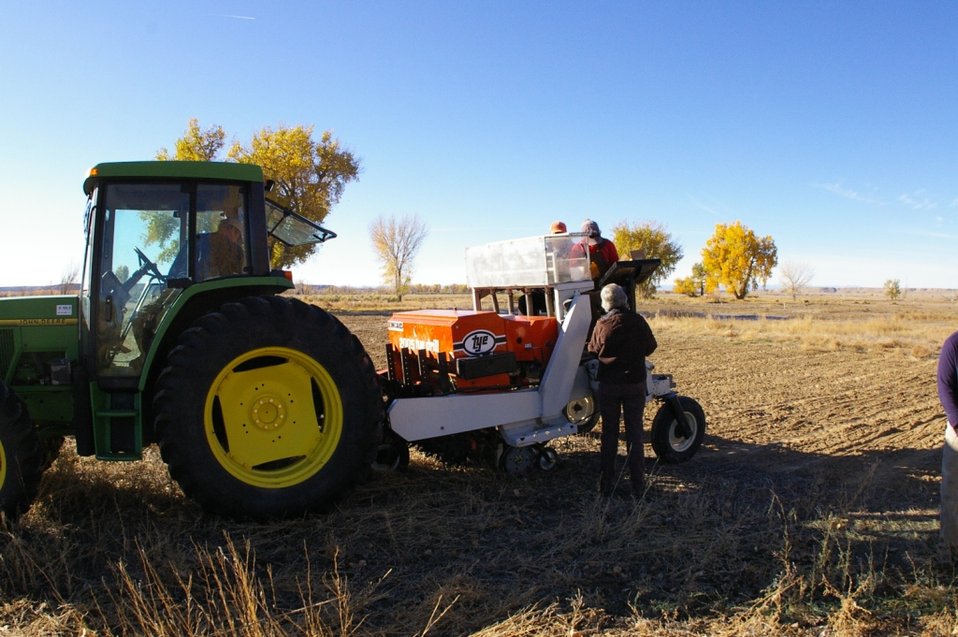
Precision Planting

This Kincaid plot drill was used to plant small precise amounts of seed into study plots. This is part of a grassland research project at Ouray National Wildlife Refuge.